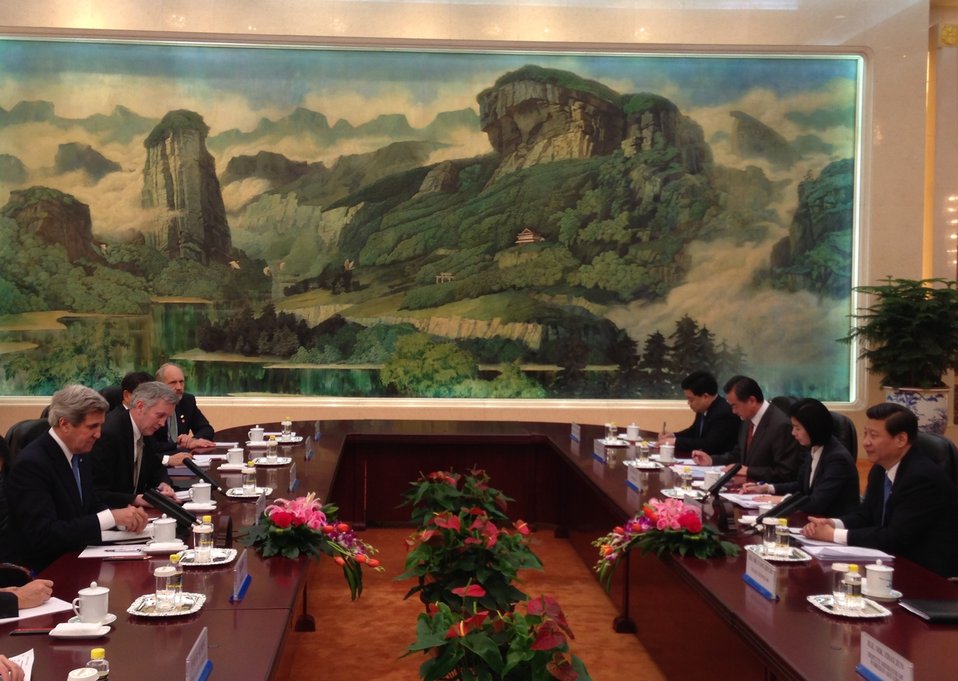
Secretary Kerry Meets with Chinese President Xi Jinping

U.S. Secretary of State John Kerry meets with Chinese President Xi Jinping at the Great Hall of the People in Beijing, China, on April 13, 2013.